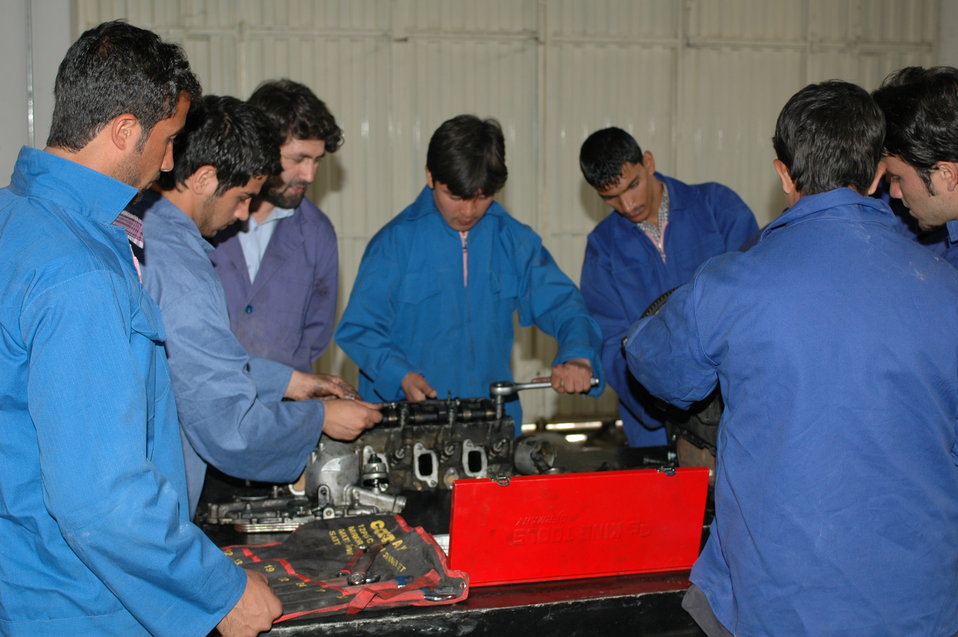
Dr Shah Visits Votech in Kabul